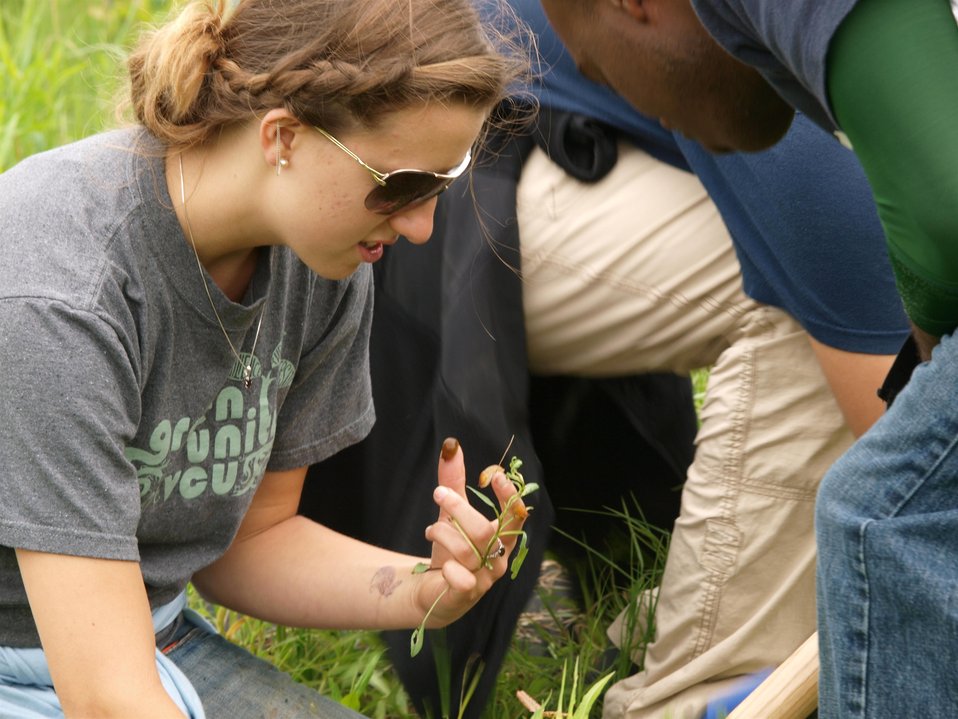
Rachel Carson Natl Wildlife Refuge, ME